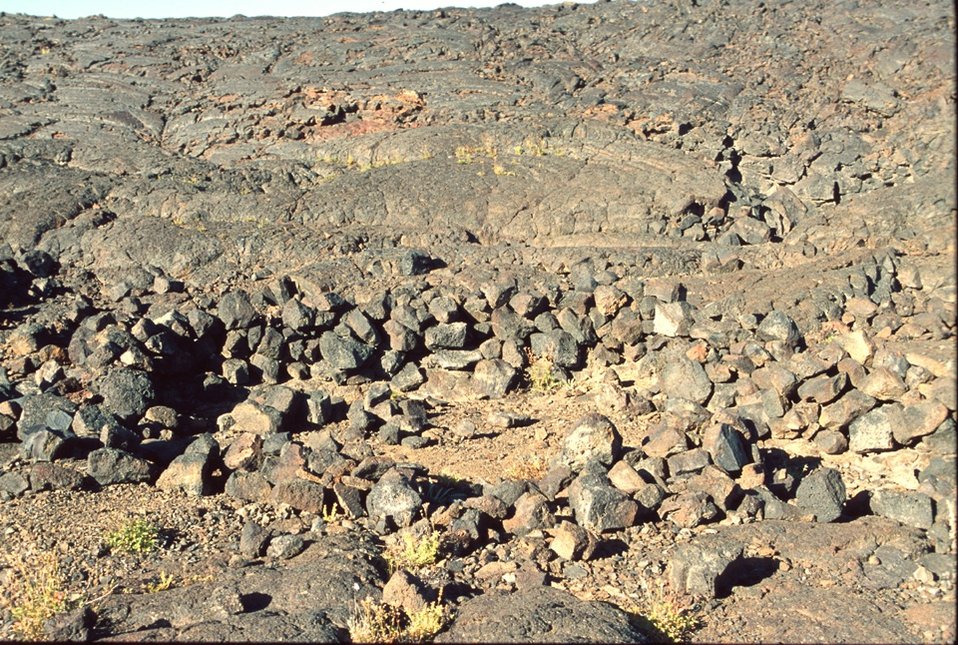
Craters of the Moon National Monument Shoshone Field Office USRD Upper Snake River District